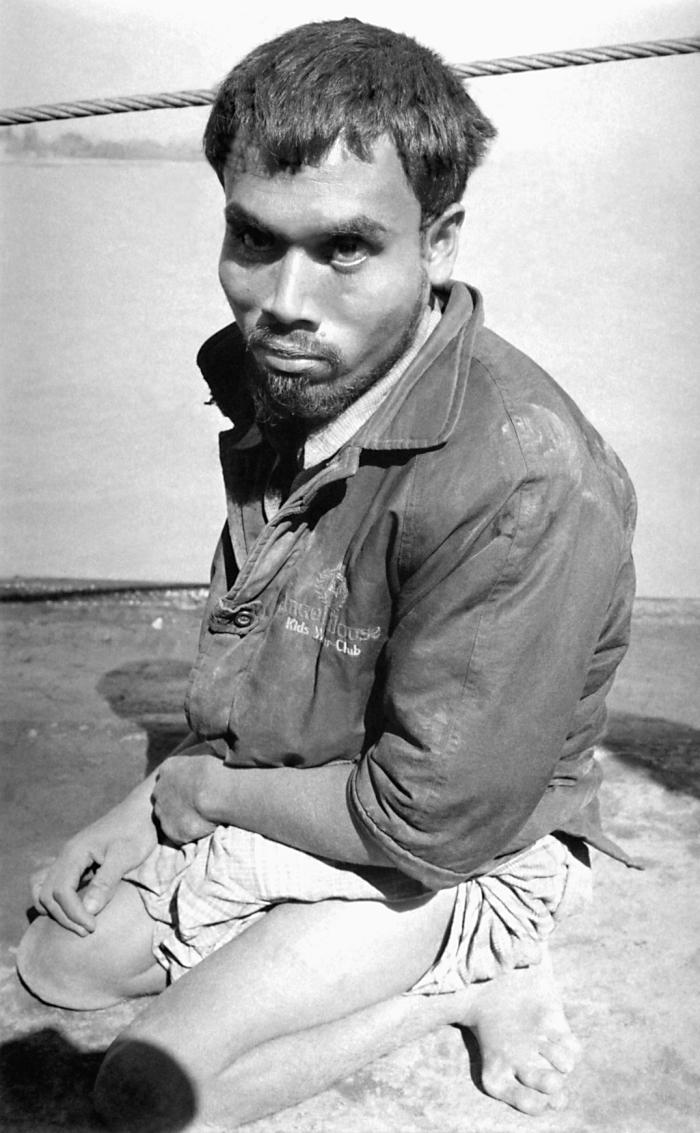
This image depicted a disabled Bangladesh man who was a ferry passenger, traveling from Amtoli to Beogina. It was part of a series provided by Dr. Stan Foster, and captured by Pierre Claquin, M.D., B.A.C., who at the time was a member of the World Health Organization's Smallpox Eradication Program. It was part of a series photographed by former E.I.S. officer, Stanley O. Foster M.D., M.P.H., and was one of a series entitled 'The Story of One Smallpox Jeep', which depicted the travails faced by the jeep, and its occupants of public health practitioners, as they road through the Bangladesh countryside in an attempt to eradicate smallpox from the country.